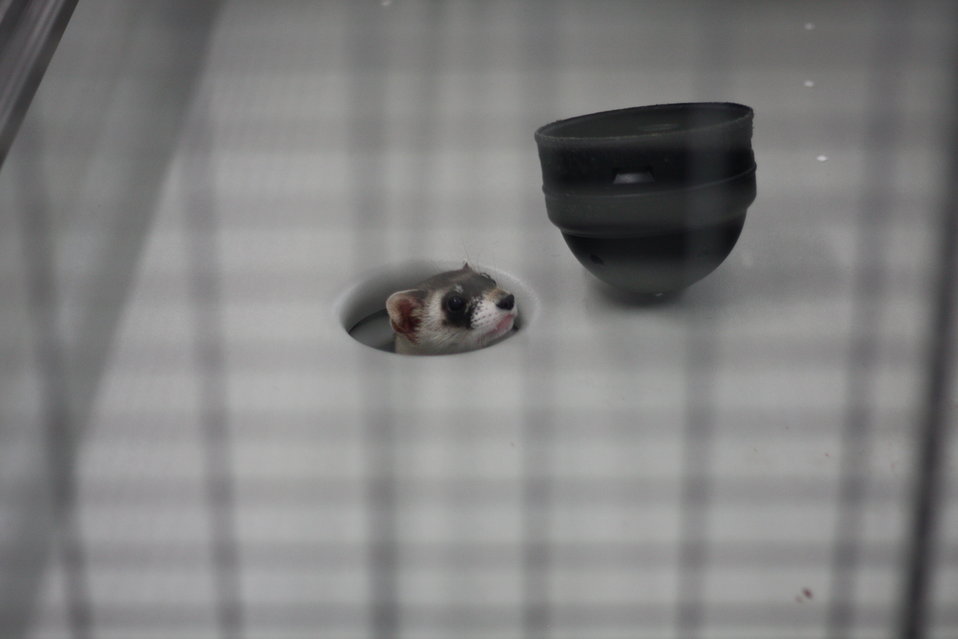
Interns visit the NBFFCC

In the summer of 2012, USFWS Region 6 interns visited the National Black-footed Ferret Conservation Center (NBFFCC) in Colorado to learn how the program reintroduces the endangered Black-footed ferret back into its native habitat.